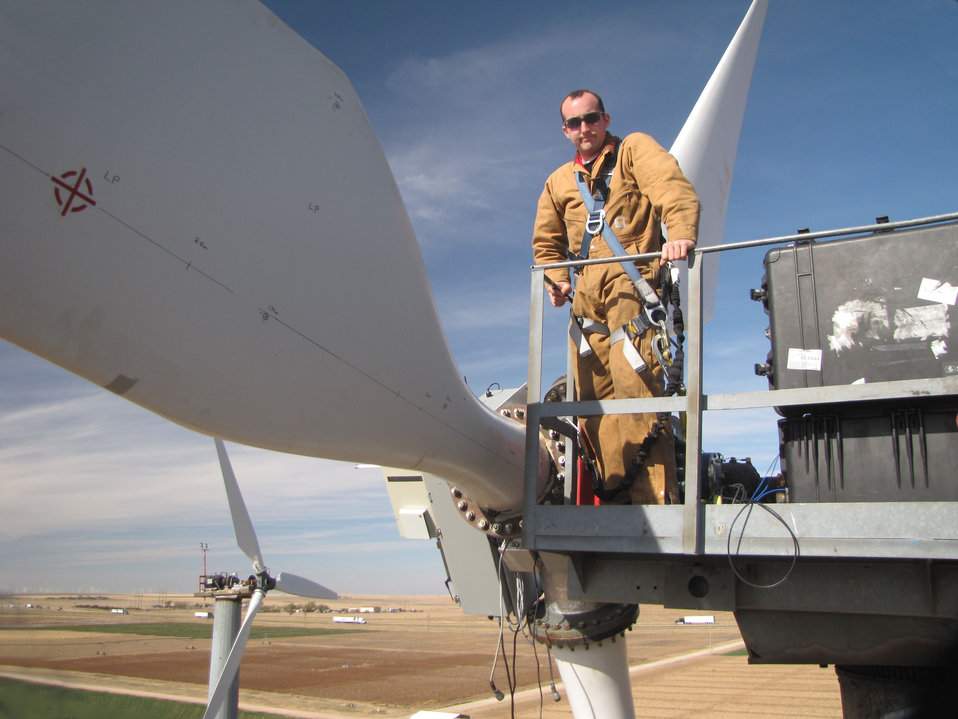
Jon White a PH.D candidate at Purdue University conducts a field test on one of the Sandia experimental wind turbines in Bushland, Texas.

SNL and Purdue are using sensors and computational software to help design a better wind turbine. The sensors are being placed on experimental turbines to provide enhanced capabilities to monitor and control the wind turbines.